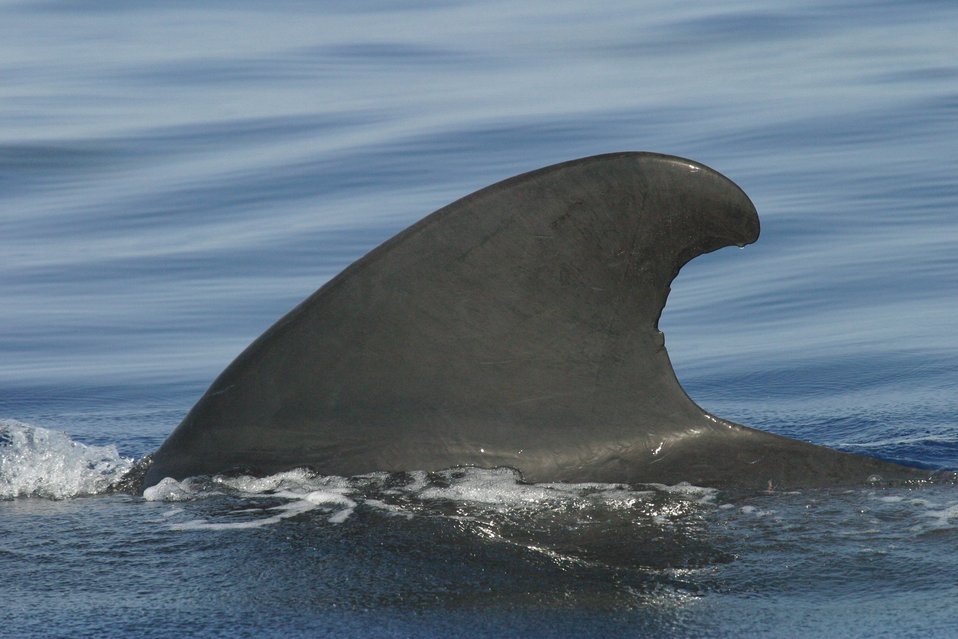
Pilot whale